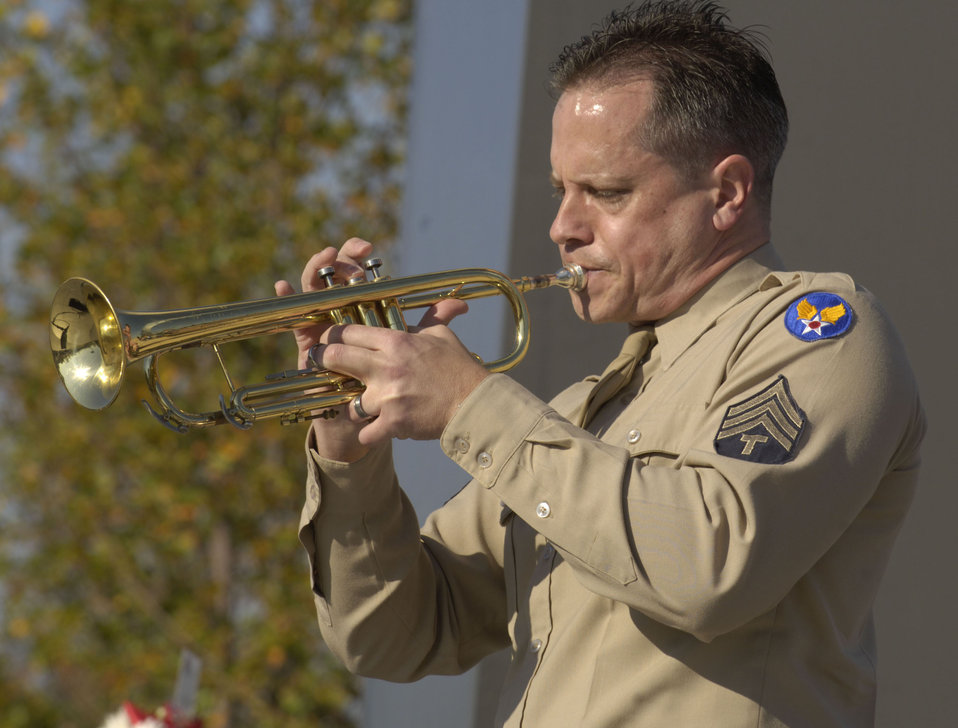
Airmen of Note at memorial

Master Sgt. Kevin Burns solos during a concert by the U.S. Air Force Band's Airmen of Note held at the new Air Force Memorial in Arlington, Va., Oct. 21. This was the band's first official concert at the new memorial.